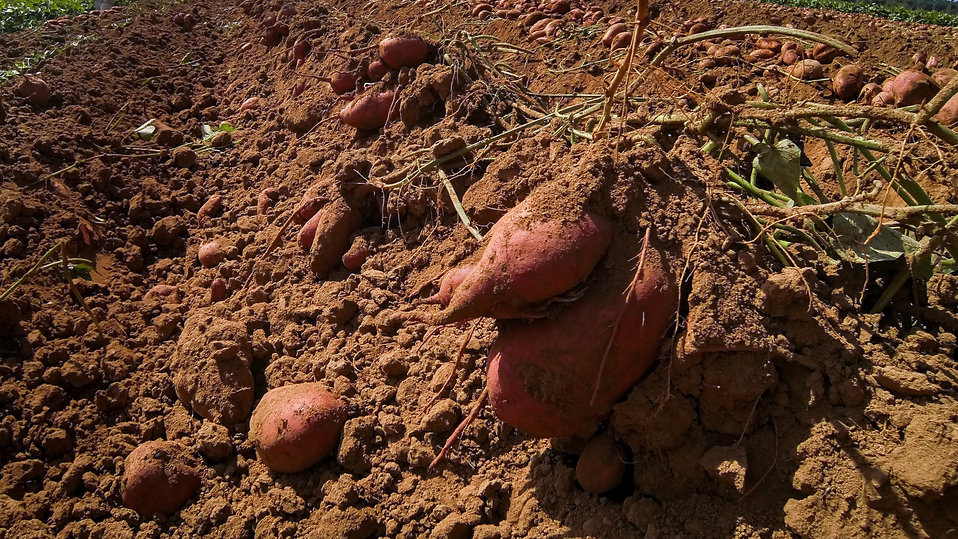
Migrant workers pick, separate, and process sweet potatoes at Kirby Farms in Mechanicsville, VA on Friday, Sept. 20, 2013. 200 acres of the farm are devoted to eggplant, spinach, beets, tomato, jalapeno peppers, melons and a variety of greens. Soybeans and small grain are grown on the remaining 300 acres. Using rotational crop practices allows Kirby Farms to double and triple crop yields. Wholesalers, who buy from this farm, sell the produce to major supermarkets in the Mid-Atlantic region, from North Carolina to Maryland. Restaurants in the local area prepare and serve the local bought produce to patrons in the Richmond, VA metropolitan area.